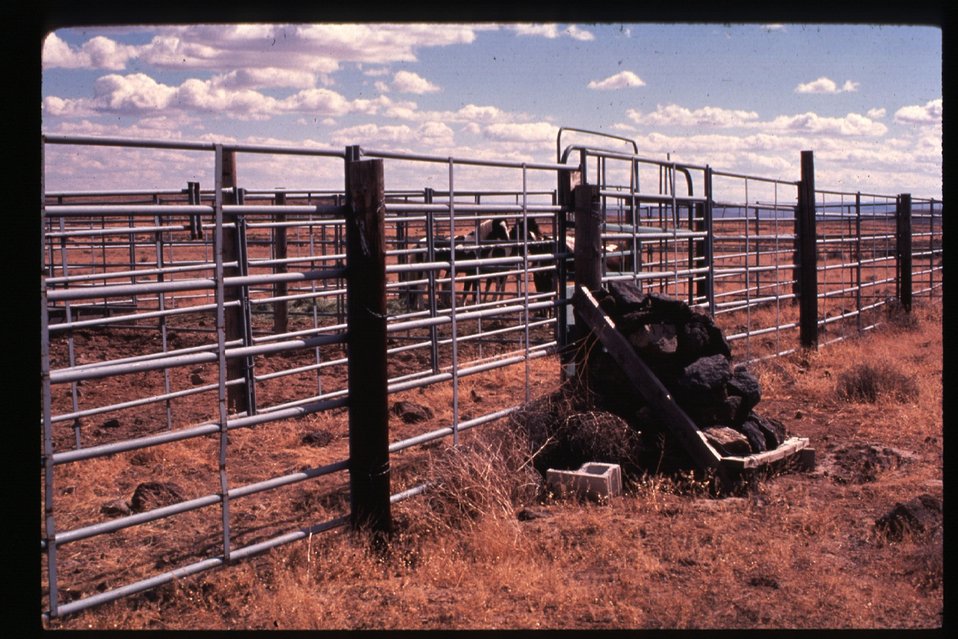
Wild horse pens Wild Horse and Burro Adoption Program LSRD Lower Snake River District